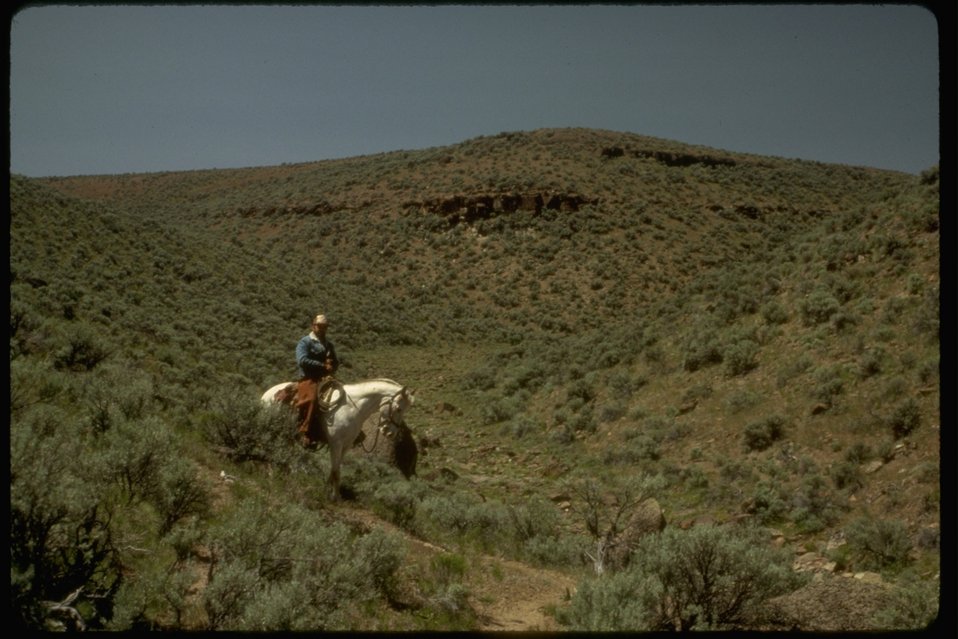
Horseback riding in Orejana Canyon Wilderness Study Area. OR 1-78